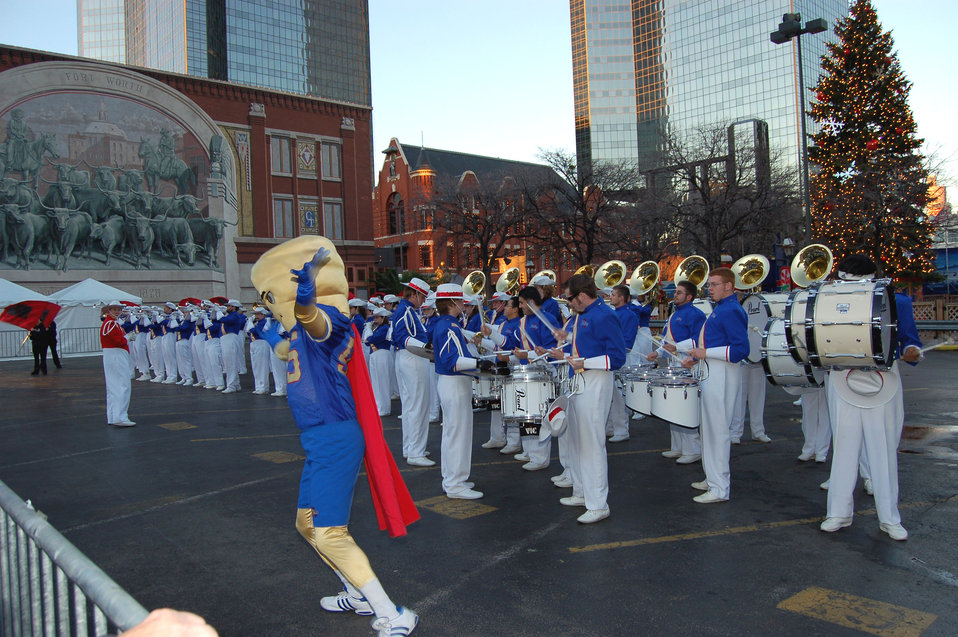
Pep rally heightens excitement for Bell Helicopter Armed Forces Bowl

Captain Cane, the University of Tulsa mascot, gets the crowd going at the Bell Helicopter Armed Forces Bowl Pep Rally at Sundance Square in Fort Worth, Texas, Dec. 22. The Bell Helicopter Armed Forces Bowl kicks off at 7 p.m. Dec. 23 at Amon G. Carter Stadium in Fort Worth.